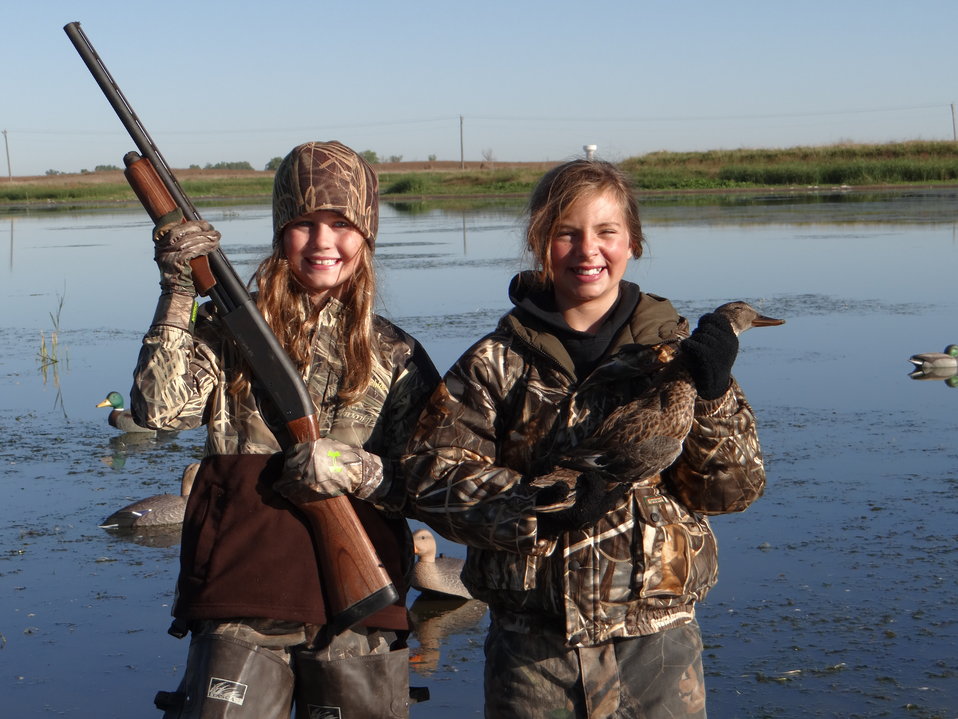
2013 Youth Waterfowl Hunters

2013 HURON WMD YOUTH WATERFOWL HUNT. Successful waterfowl hunters after the second day morning hunt. The Huron Wetland Management District hosted its 10th annual Youth Waterfowl Hunt in September. This event provided 28 youth hunters between the ages of 12 – 15 and (new) mentored hunters (10-11), an opportunity to learn about various migratory birds and their habitats, duck and goose calling, decoys, and waterfowl hunting techniques. This event continues to be a success each year due to the dedicated volunteers within the community of Huron.

Photo Credt: Chuck Pyle/USFWS